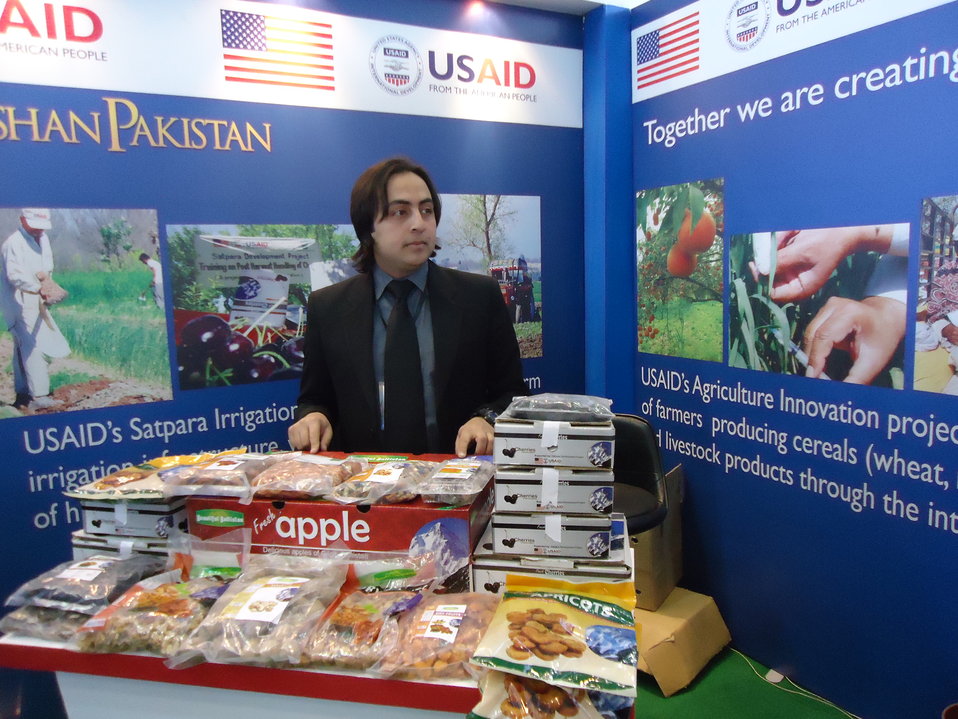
Sadpara Development Project

SDP USAID Stall